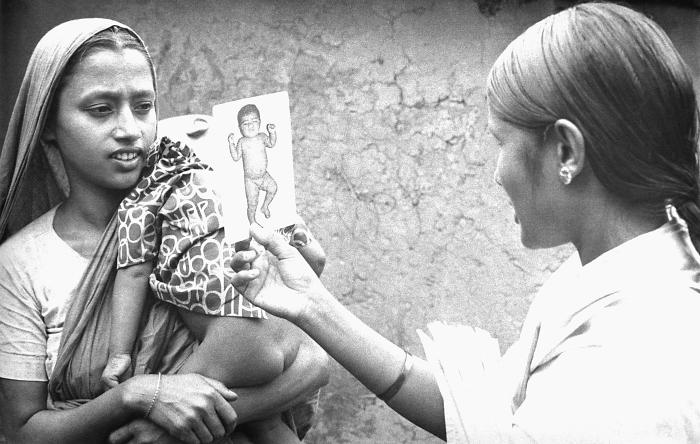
After she'd checked the smallpox vaccination scar on this mother and child's forearms, the volunteer smallpox eradication team vaccinator was showing the mother the photograph, which was shown to all Bangladesh residents, depicting a baby with the characteristic maculopapular smallpox rash.During these country wide searches for smallpox, each one of the 12 million homes had to be visited, in order to show residents this smallpox case photograph, as well as to announce the money reward for anyone reporting a case, and to ask if they had seen or knew of any cases resembling the one pictured.